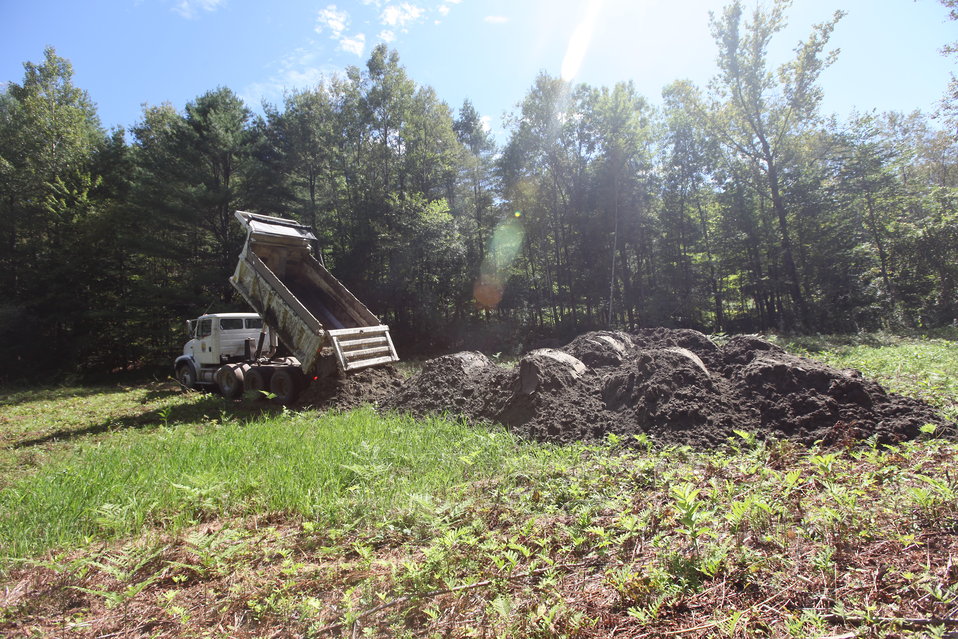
Storm damage relief at White River NFH

Heavy equipment operators came from other USFWS stations to help clean up.